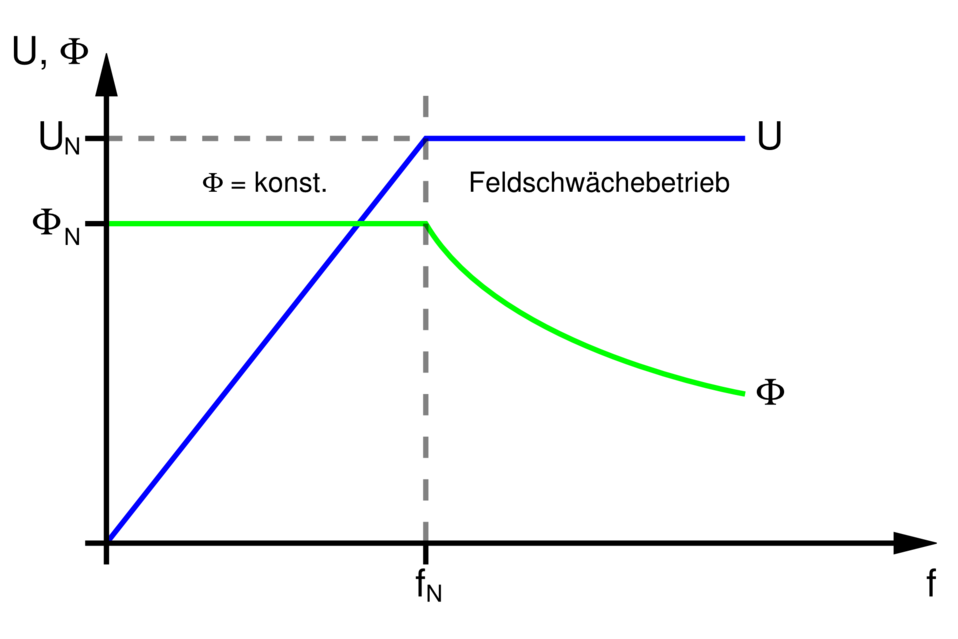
Deutsch: U/f-Kennlinie an einem Frequenzumrichter